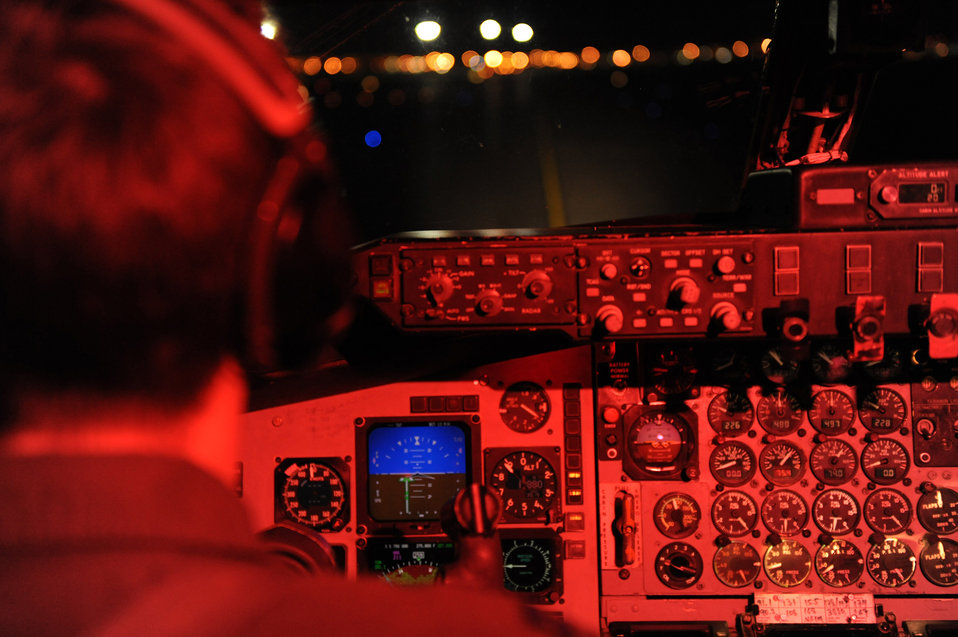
Night operations at Red Flag

Capt. Jason Merrill taxis down the runway Feb. 3 on the way to a night refueling mission during a Red Flag exercise at Nellis Air Force Base, Nev. Red Flag is a multi-national exercise providing a realistic environment to practice combat scenarios. The experience gained during the exercise is vital to the survival of air crews in combat. Captain Merrill is a pilot with the 905th Air Refueling Squadron at Grand Forks AFB, N.D.